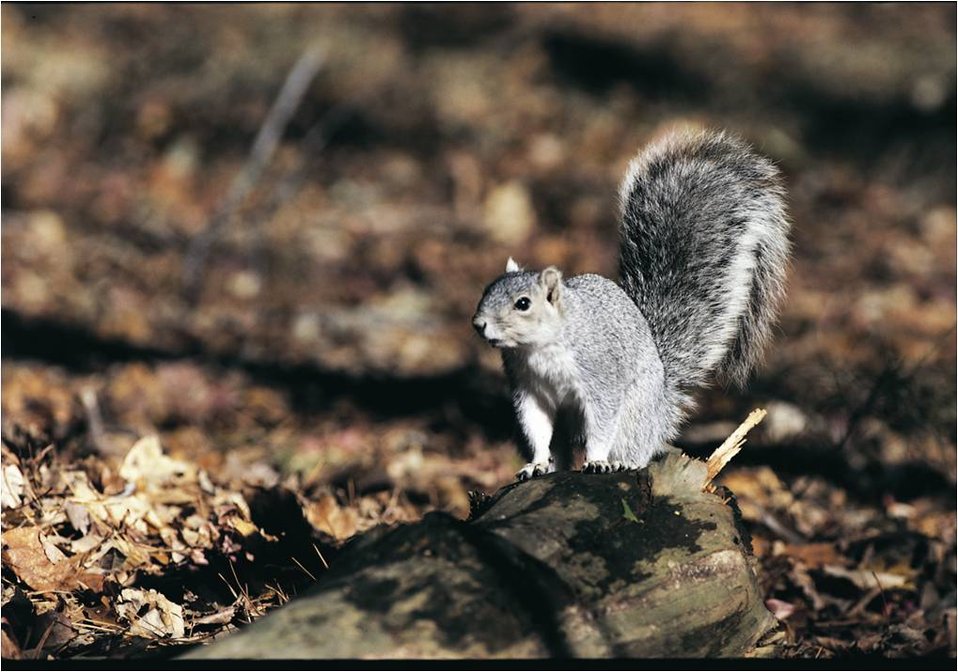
Delmarva Fox Squirrel